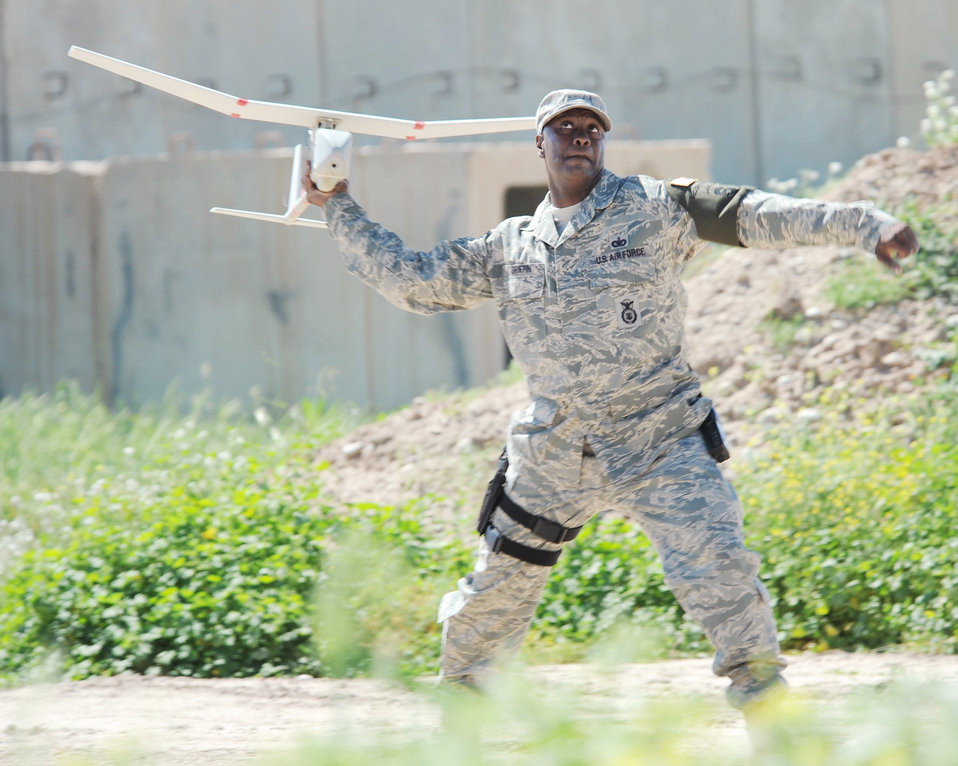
Airmen launch RQ-11B Raven

Master Sgt. Bryon Griffin launches a RQ-11B Raven unmanned aerial vehicle at Kirkuk Regional Air Base, Iraq, March 23, 2010. The Raven is equipped with cameras, sensors and communications tools to perform missions in reconnaissance, surveillance, target identification and battle damage assessment inside and outside the wire. Sergeant Griffin is the NCOIC of the 506th Expeditionary Security Forces Raven team and deployed from Patrick Air Force Base, Fla.